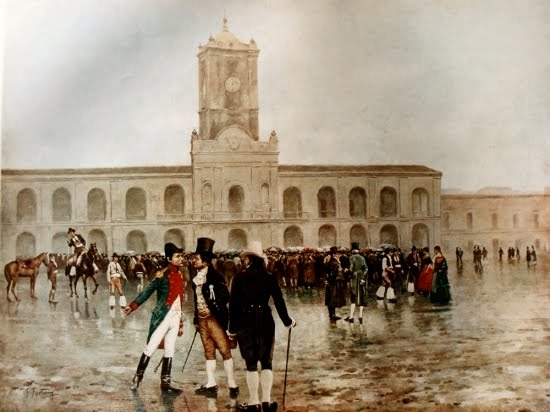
Español: La revolución de Mayo